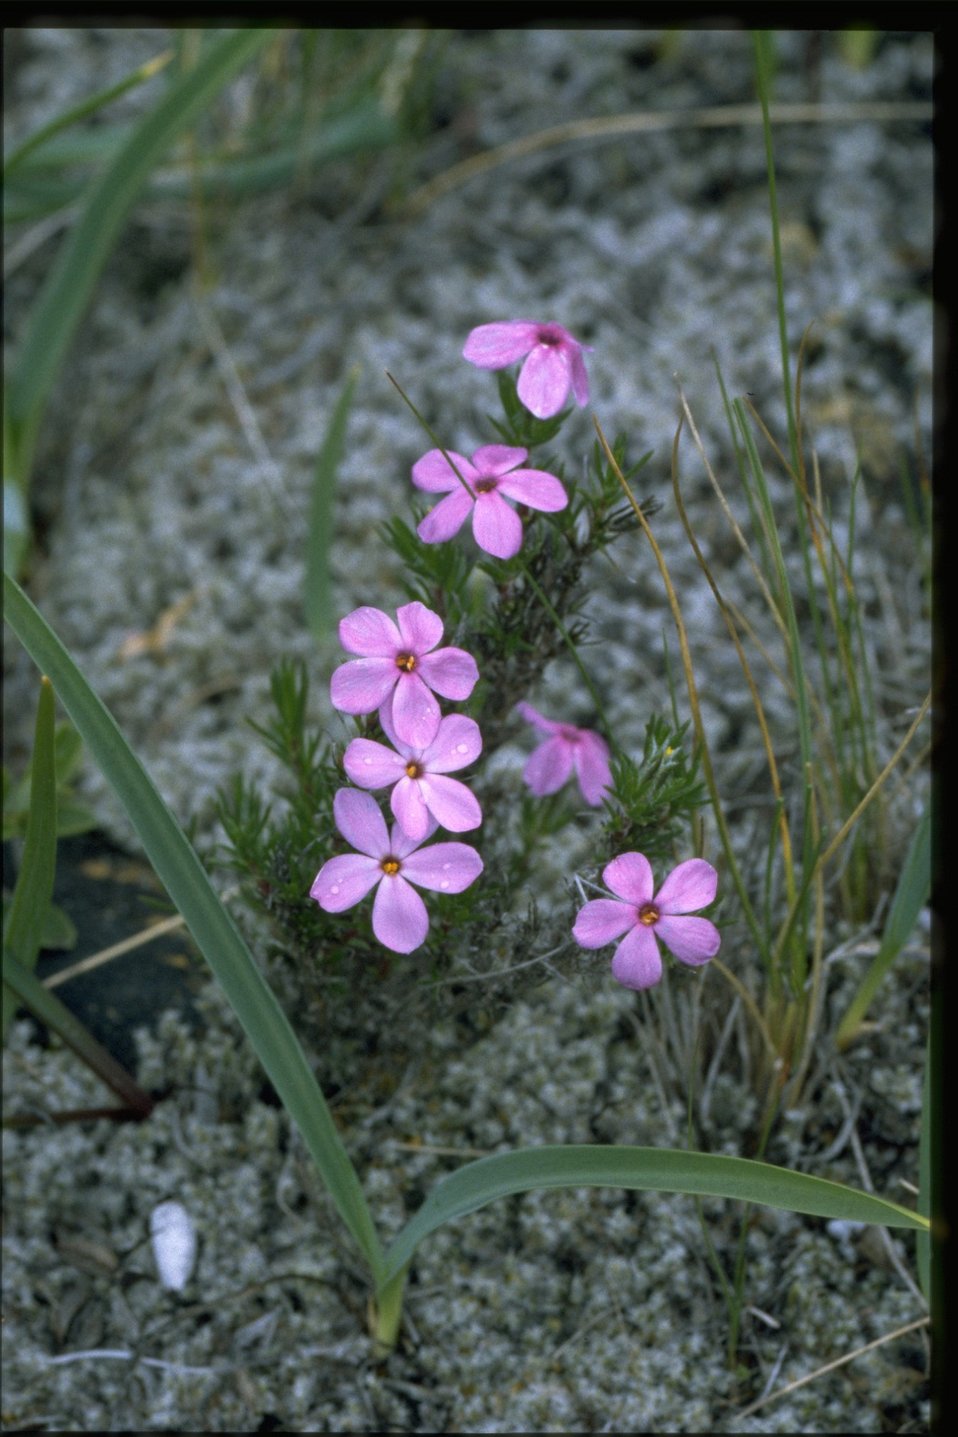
Medium shot of Phlox diffusa.